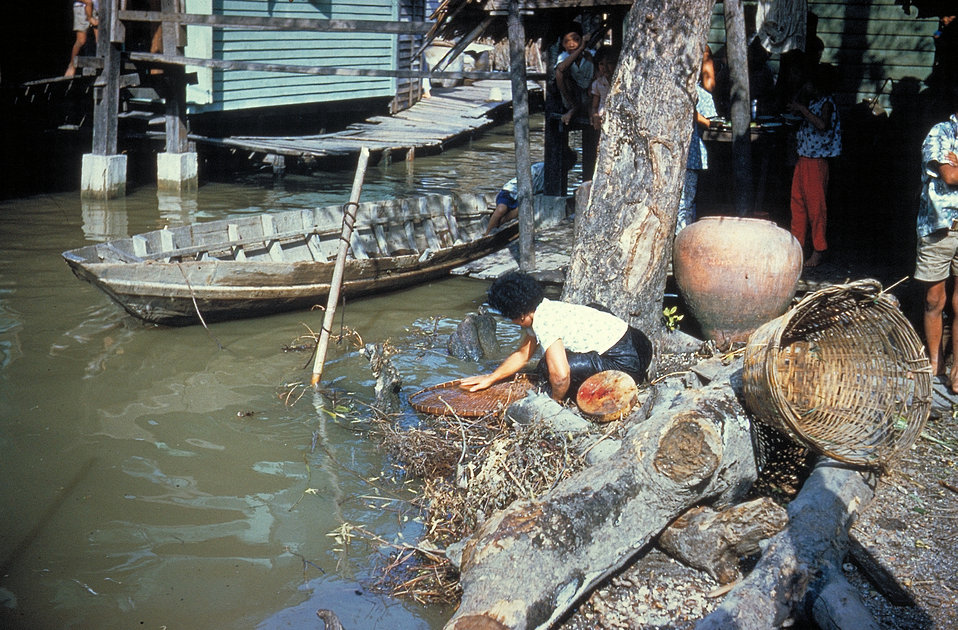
Typical Vibrio cholera contaminated water supply.